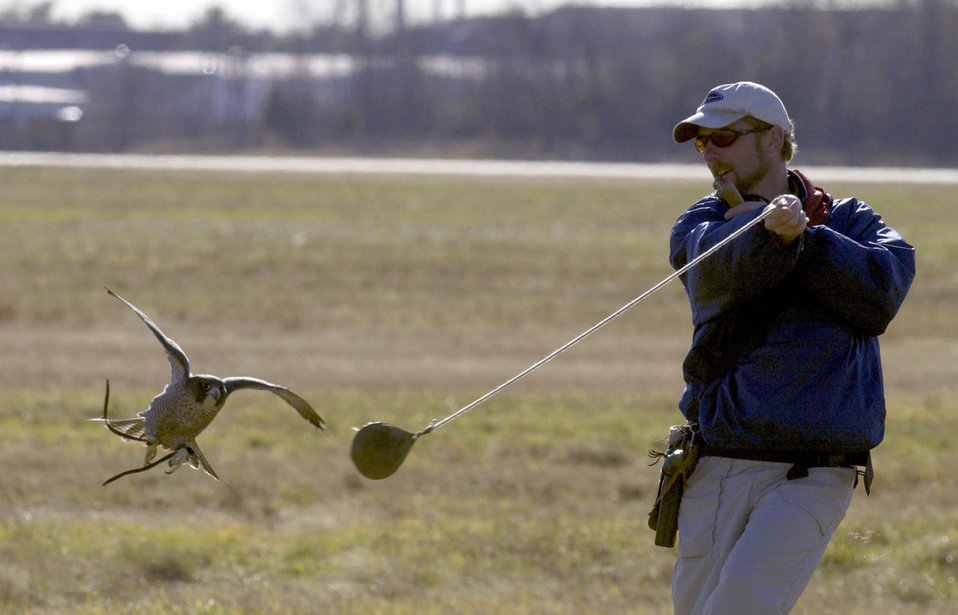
Watch the birdie

MCGUIRE AIR FORCE BASE, N.J. -- Chris Feairhelle, a wildlife control specialist, lures in Thunder, a hybrid gyrfalcon and peregrine falcon. Thunder is one of the nine falcons at the base working with the Bird Awareness Strike Hazard program. The program designed to reduce the threat of bird strikes to aircraft.